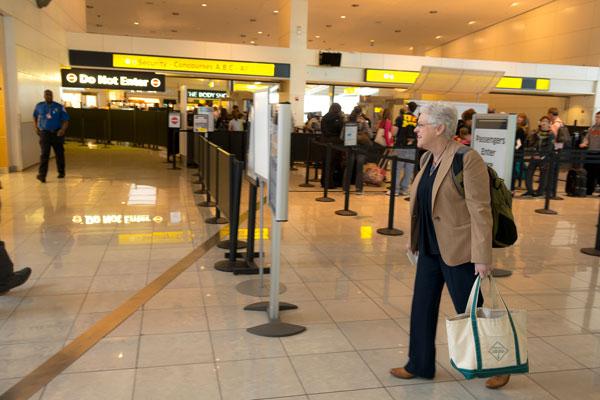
Day in the Life - April 4, 2014

5:58 pm - Although she keeps a small apartment near EPA headquarters, almost every weekend McCarthy travels back to Boston, to her home and her husband. (12/12)